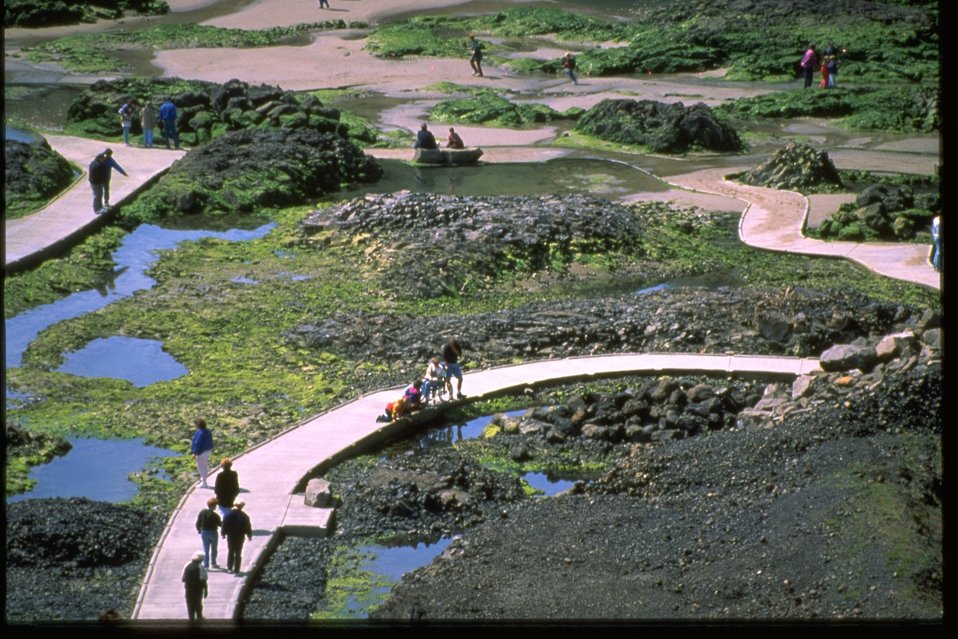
Programs at Yaquina Head Outstanding National Area accessible tidepools.